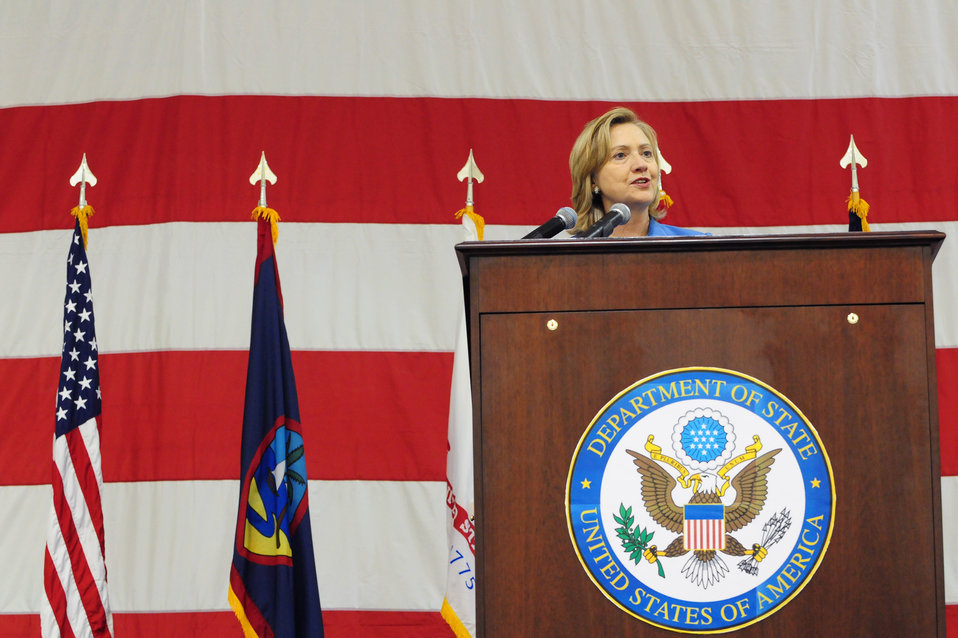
Secretary Clinton Speaks to Servicemembers

U.S. Secretary of State Hillary Rodham Clinton speaks to airmen, soldiers, sailors, and marines at Andersen Air Force Base in Guam on October 29, 2010.